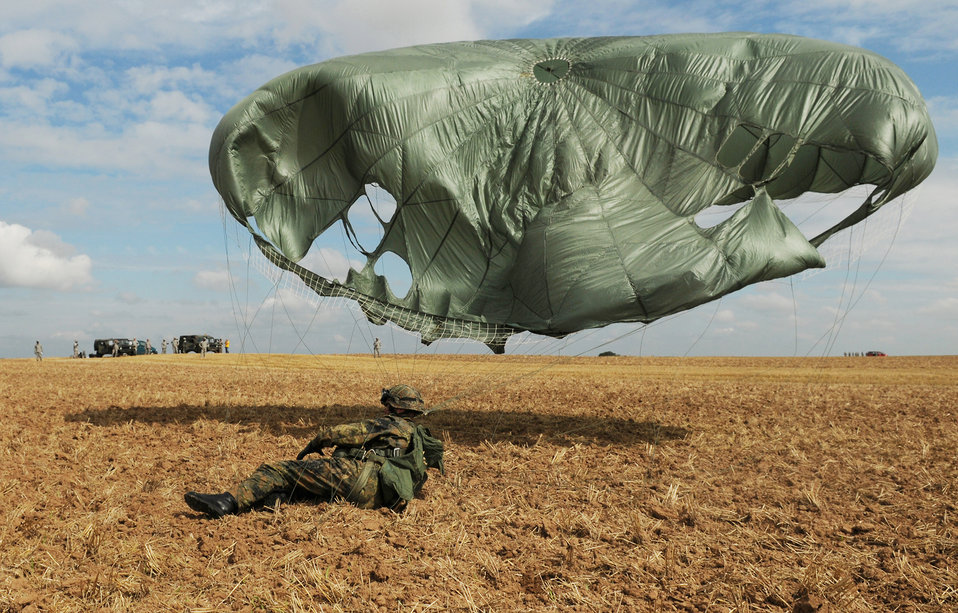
5 NATO countries take part in jump week

German army soldier Christian Schlueter lands after parachuting out of a C-130 Hercules on the Bunker drop zone Aug. 13 in southwestern Germany. U.S. Soldiers and Airmen performed a combined airborne drop with four other NATO countries during International Jump Week.